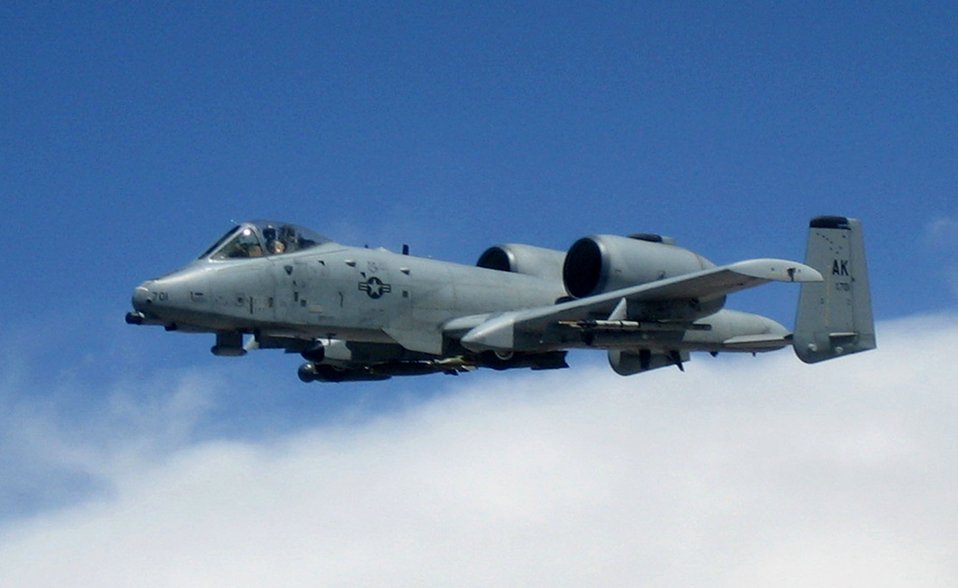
Airpower Summary for Dec. 12, 2007

An A-10 Thunderbolt II flies a combat mission over Afghanistan supporting Operation Enduring Freedom.